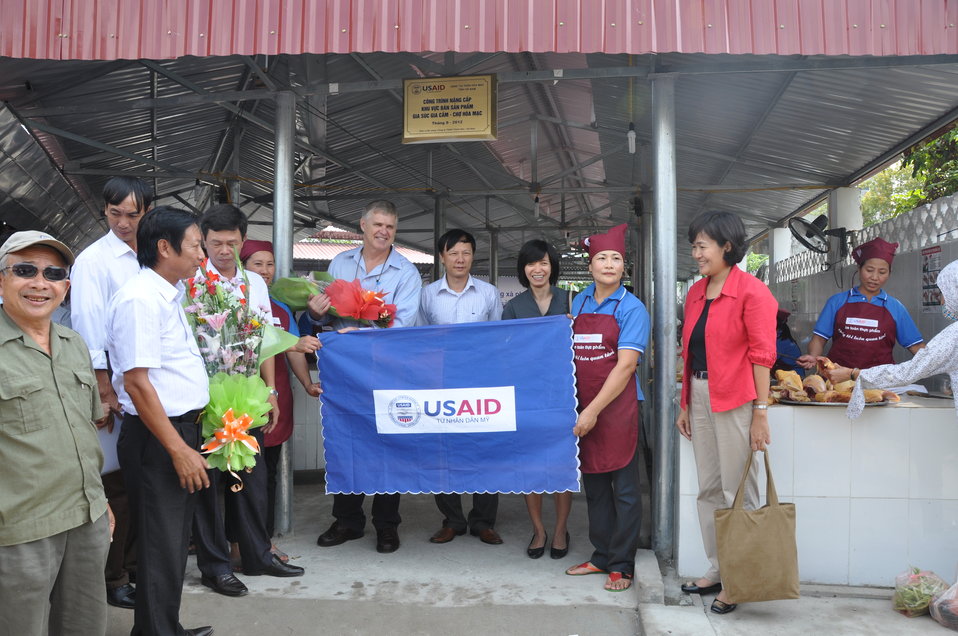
Handover Ceremony Hoa Mac Market, Ha Nam

October 26, 2012 Photo: Richard Nyberg, @USAIDVietnam